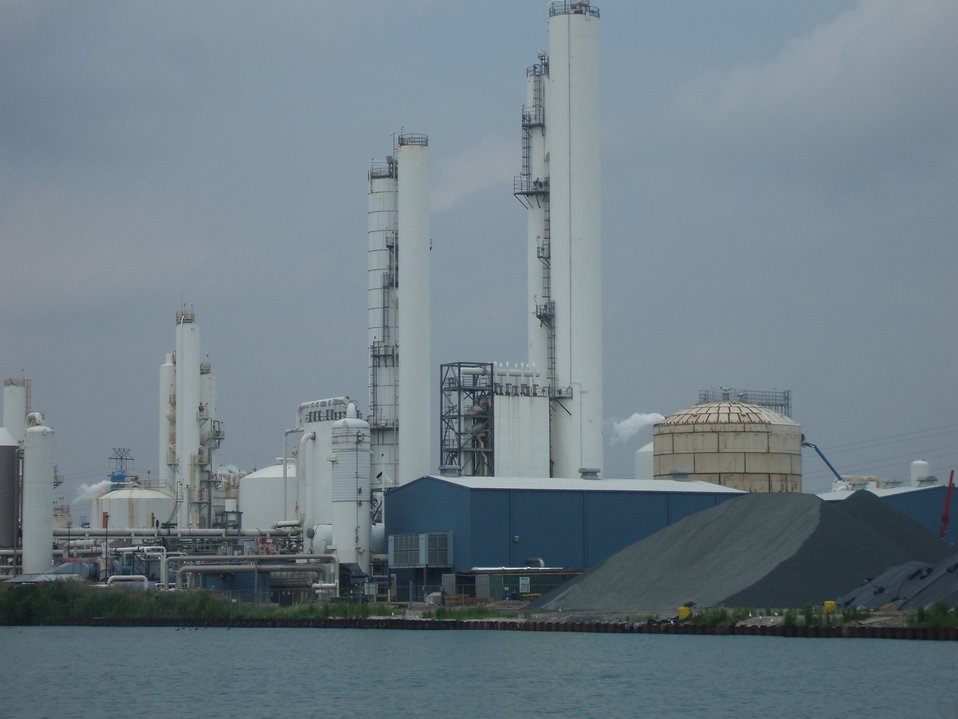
Industry along the Detroit River